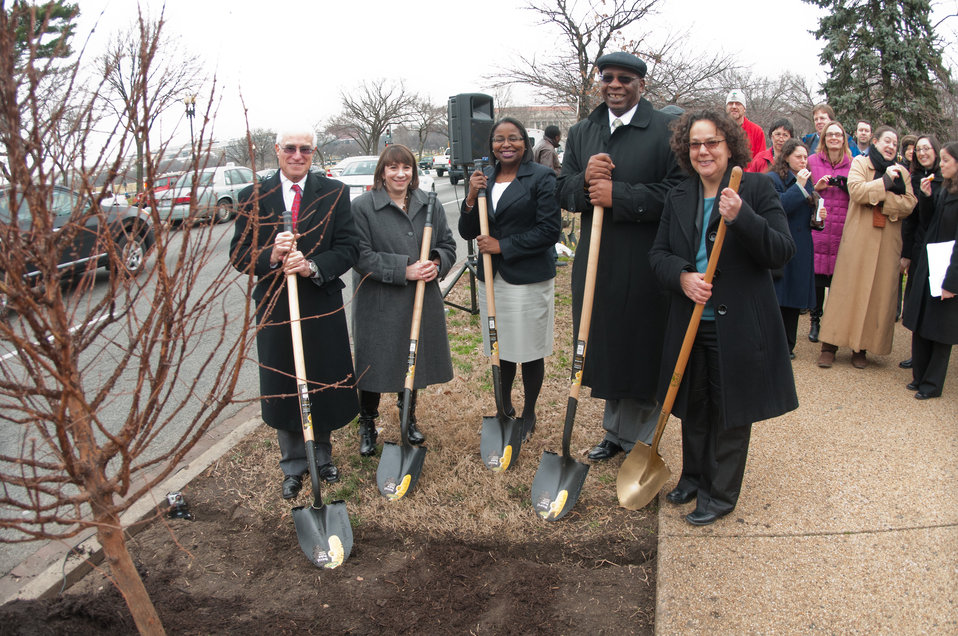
United States Department of Agriculture (USDA) Under Secretary Natural Resources and Environment Harris Sherman (left), District of Columbia State Forester Monica Lear (center), District Department of Transportation Director Terry Bellamy (2nd from right), White House Council on Environmental Quality Chair Nancy Sutley (right) begin to apply a layer of mulch to the freshly planted Dawn Redwood for the Celebration of Tu B’Shevat “The New Year of the Trees” event on the District of Columbia western lawn next to the USDA Headquarters, Whitten Building at 14th Street and Independence Ave SW, Washington, D.C. on Wednesday, February 8, 2012. In the background the audience was able to participate in the sharing of food, with apple slices, grapes and figs.